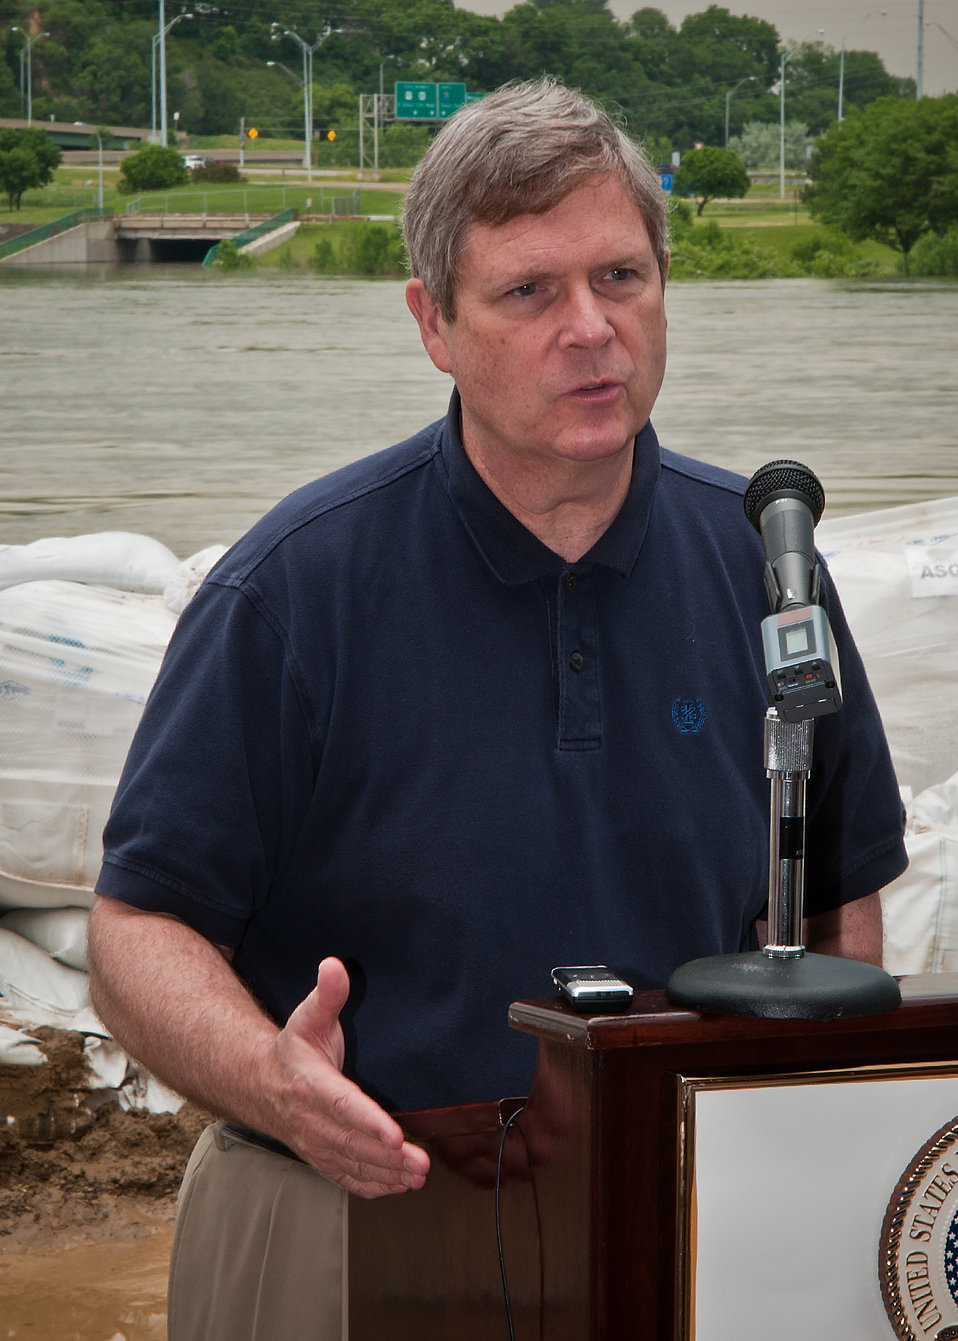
Agriculture Secretary Tom Vilsack held a town hall meeting at the Marina Inn in South Sioux City, Nebraska Fri., June 17, 2011 on the floodwaters along the Missouri River affecting Iowa and Nebraska. The goal of the meeting and the conversations with the

Agriculture Secretary Tom Vilsack held a town hall meeting at the Marina Inn in South Sioux City, Nebraska on Friday, June 17, 2011, on the floodwaters along the Missouri River affecting Iowa and Nebraska. The goal of the meeting with the producers and community leaders is to get a firsthand look and provide information back to Washington to better deliver disaster programs quckly to effectively respond to this disaster. Senator Ben Nelson, Nebraska a member of the Senate Committee on Agriculture, Nutrition and Forestry, accompanied Secretary Vilsack at the meeting. The meeting provided the information necessary for USDA agencies to implement programs to assist producers as they assess recovery efforts. USDA administers many programs to assist with recovery in rural areas reeling from natural disasters.